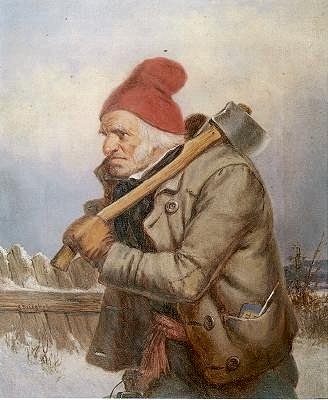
The Woodcutter, oil painting by Cornelius Krieghoff, 15 x 9.2 in.